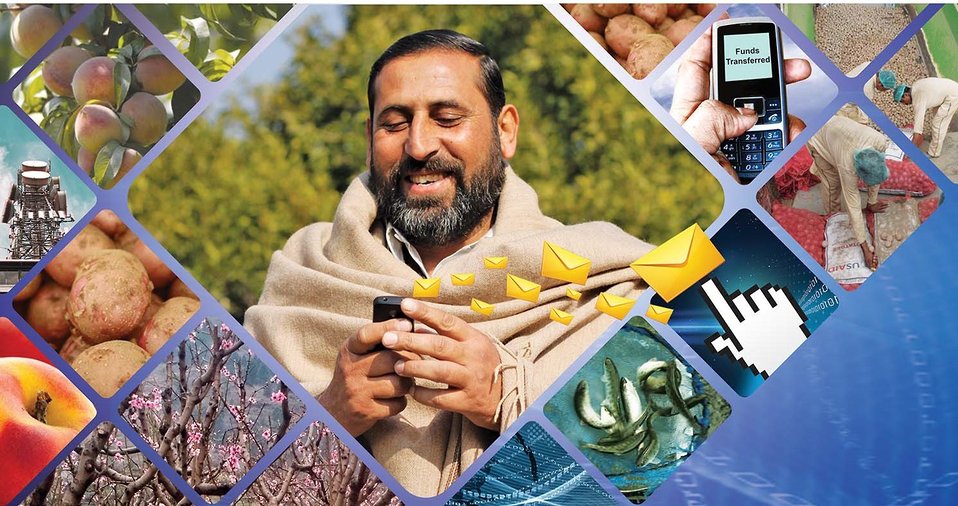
Backdrop 25x10